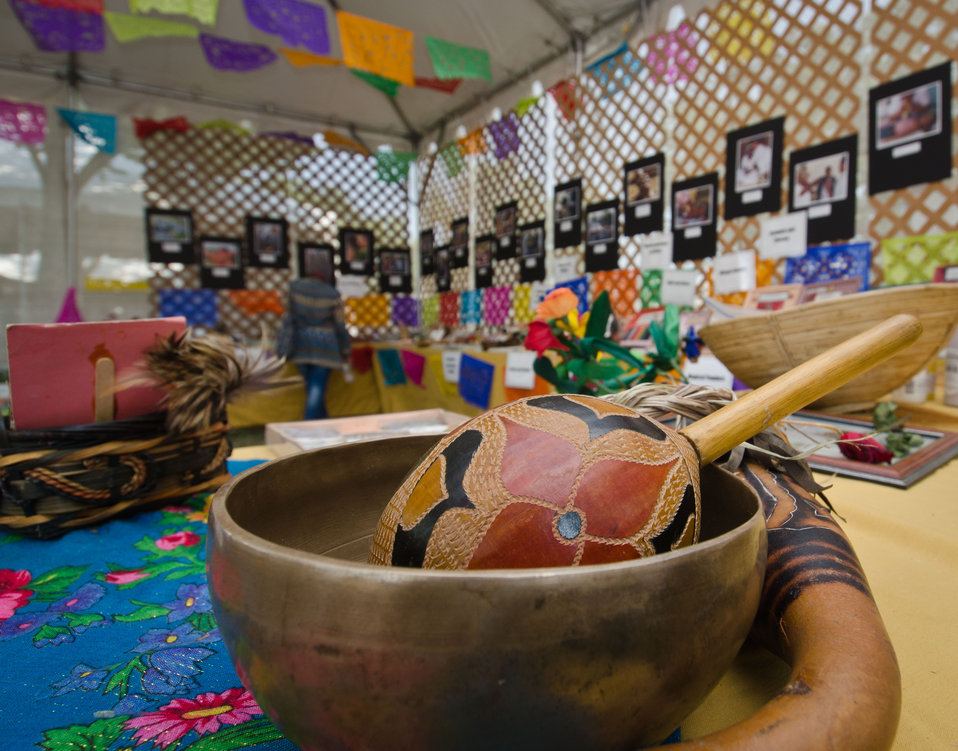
University of New Mexico highlights traditional folk healing during the 2012 Smithsonian Folklife Festival, on the National Mall in Washington, D.C. on Friday, June 29, 2012 Near by is the Mississippi State University Mobile Veterinary Clinic that serves the Northern Mississippi area by providing Spay and neuter services to those in need, and provides medical experience for students. One of the three themes this year is “Campus and Community.” It celebrates the 150 years of the USDA and the Land-Grant University System. The U.S. Department of Agriculture (USDA) and the Land-Grant system extend education across the country, contributing to American agriculture success and rural prosperity. “Campus and Community” has demonstrations, discussions, hands-on activities, and entertainment to that showcase the many ways that this partnership works to improve American agriculture and rural life.